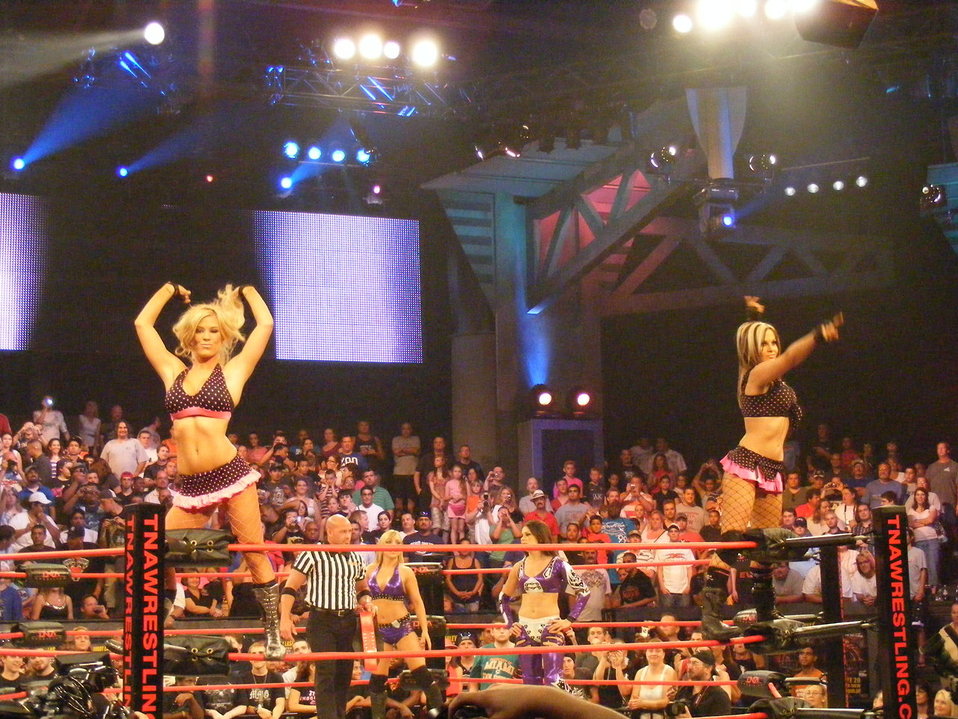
Madison Rayne and Velvet Sky (The Beautiful People) at No Surrender
Category: The Beautiful People